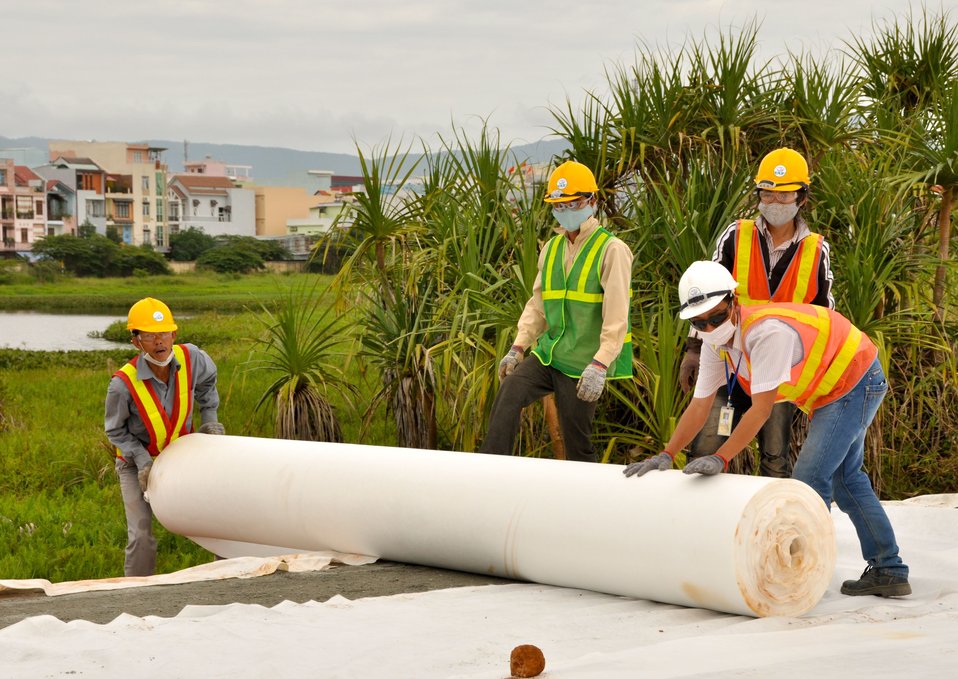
Site Preparation for Environmental Remediation of Dioxin Contamination at Danang Airport

DanDanang Airport, January 22, 2013

Photo: Richard Nyberg @USAIDVietnam
ang Airport Remediation Site Visit